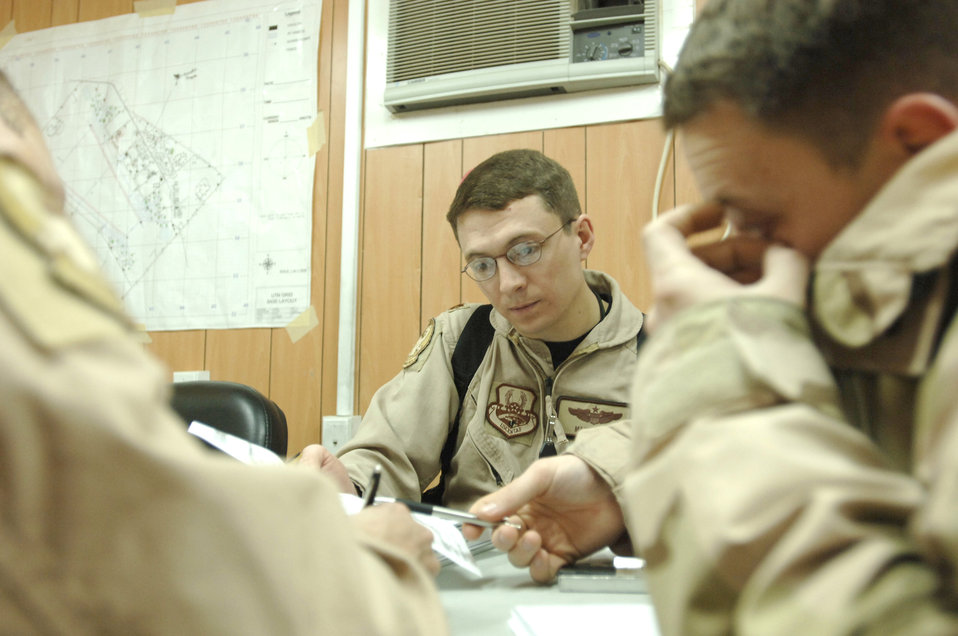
First JPADS airdrop over Iraq a success

Maj. Matt Lewis briefs his crew in preparation to employ the Joint Precision Airdrop System in combination with the Improved Container Delivery System for the first time in Operation Iraqi Freedom Feb. 16. Pairing the JPADS mission planning software with the I-CDS bundles increases airdrop accuracy by 60 percent. Major Lewis is an aircraft commander assigned to the 777th Expeditionary Airlift Squadron.